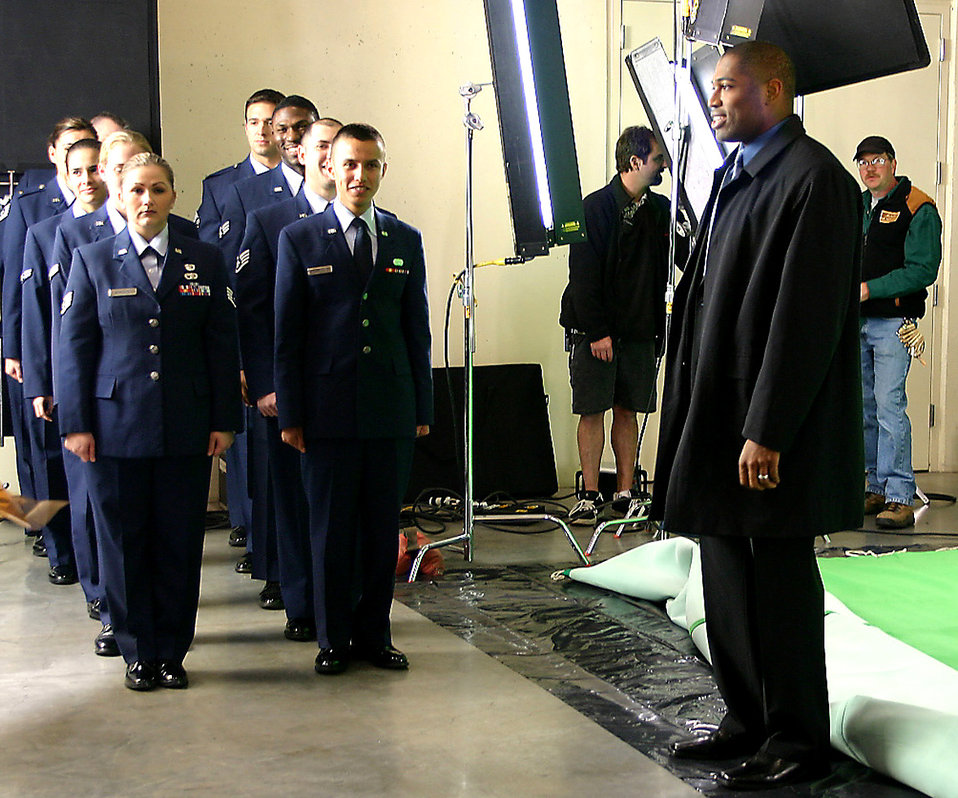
Airmen on Monday Night Football

SEATTLE (AFPN) -- Airmen from McChord Air Force Base, Wash., wait for their cue to march in front of Seattle Seahawks' running back Shaun Alexander during the filming of a Monday Night Football promo Dec. 1 at Qwest Field in Seattle.